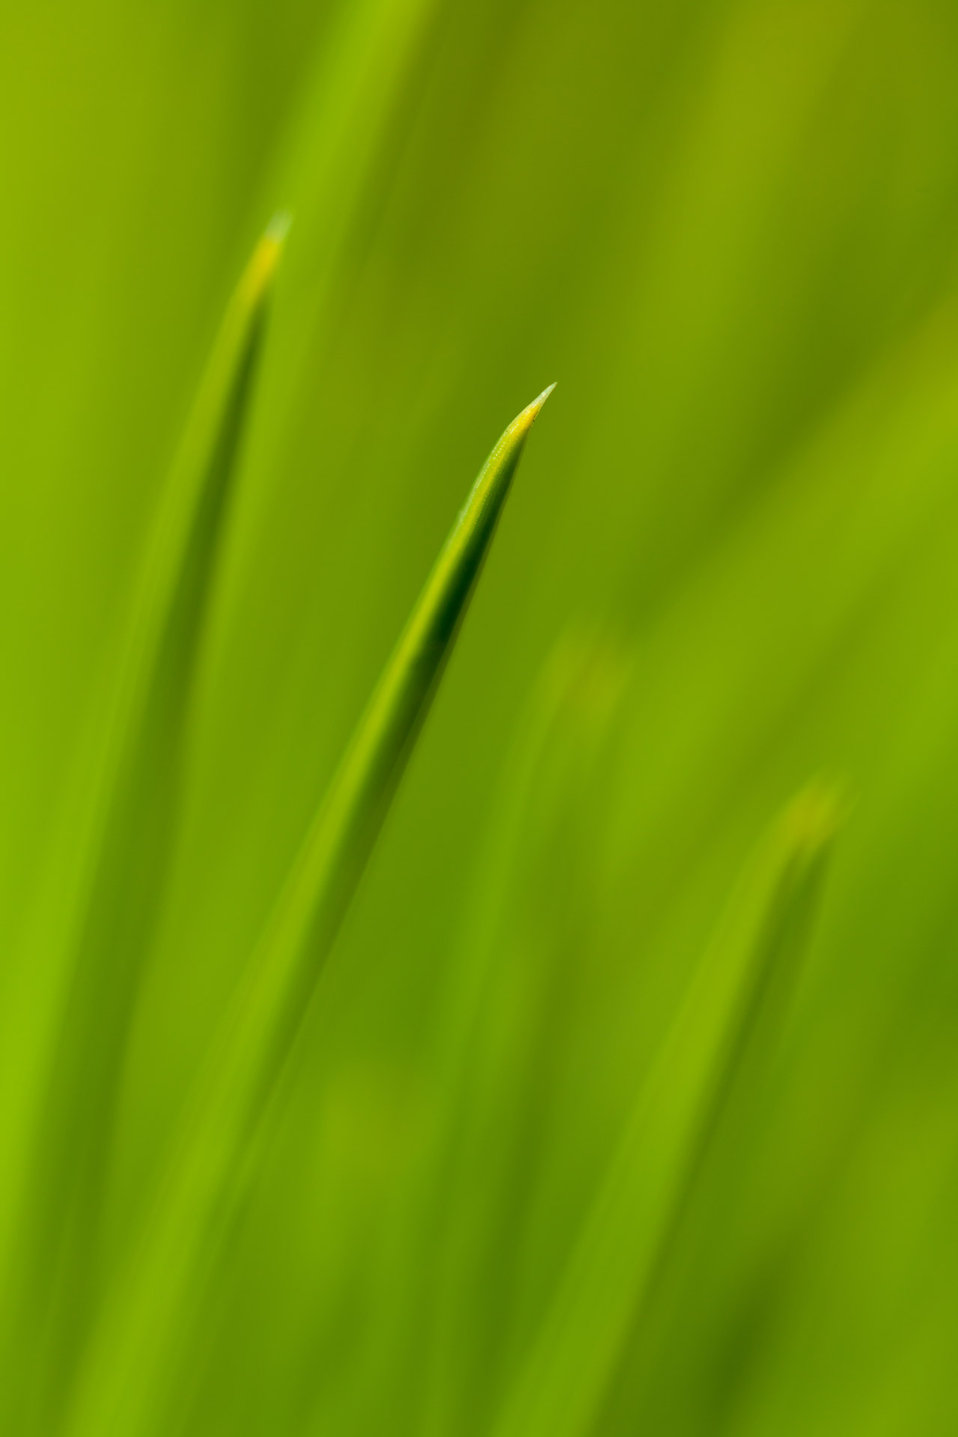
Macro pine needles

Green pine needles in macro.